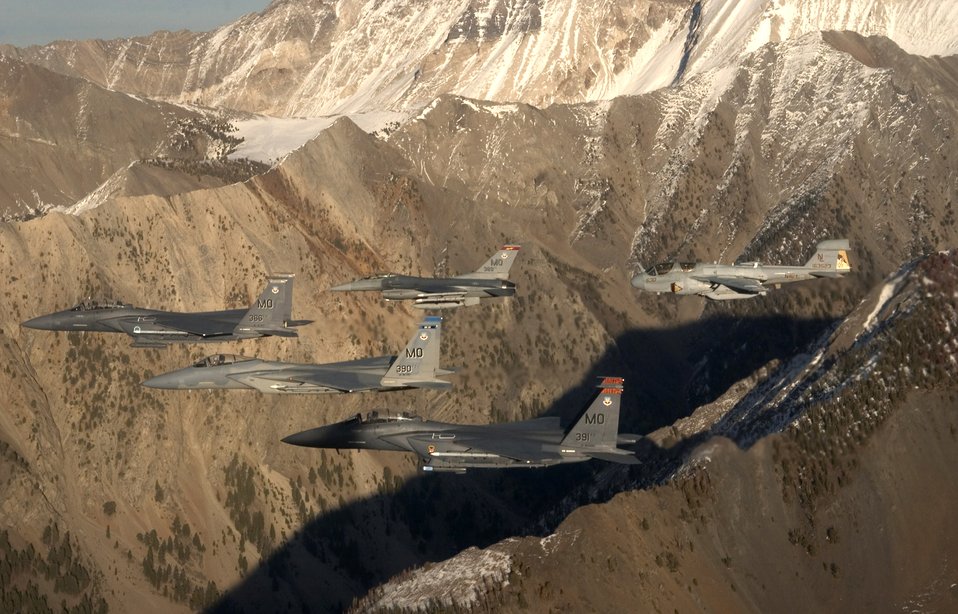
Flying over Idaho

A five-ship formation flies over the Idaho Sawtooth Mountains Nov. 1. Col. Anthony Rock, 366th Fighter Wing commander, led the formation of two F-15E Strike Eagles, and F-15 Eagle, an F-16 Fighting Falcon, all from the 366th FW at Mountain Home Air Force Base, Idaho, and an EA-6B Prowler from the 388th Electronic Control Squadron at Naval Air Station Whidbey Island, Wash. The 366th FW began the first phase of its F-16 drawdown when five jets departed the base Nov. 2. The departure is part of the wing's realignment.